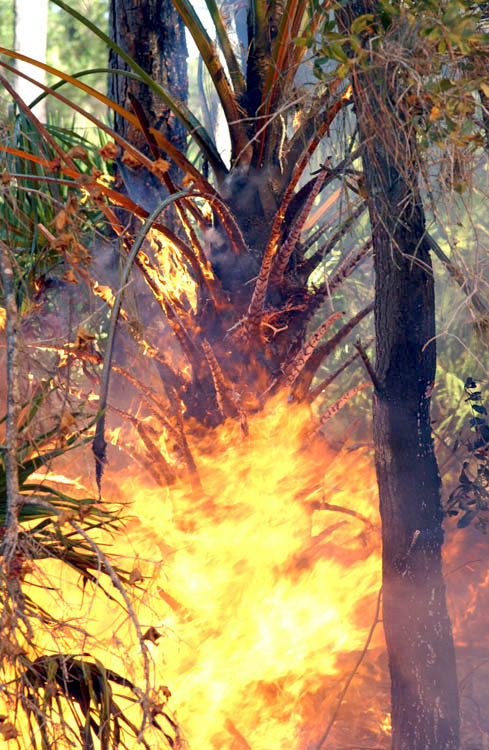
Fully engulfed

MACDILL AIR FORCE BASE, Fla. -- This palm tree was fully engulfed in less than five minutes. They are highly flammable and one firefighter said they would burn even during a torrential downpour.